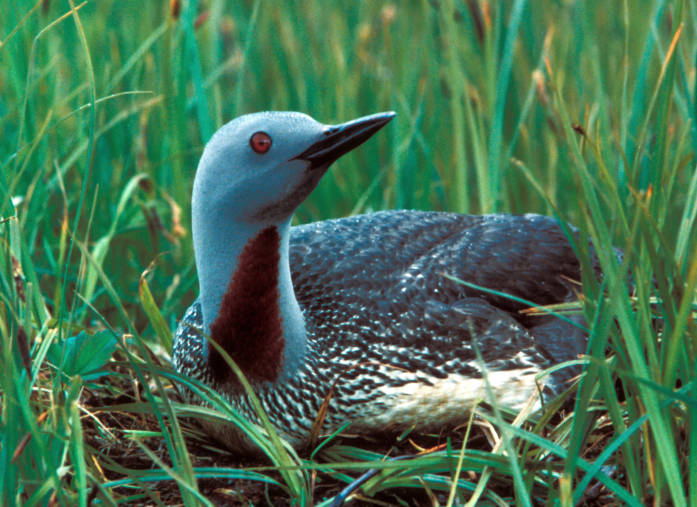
red-throated loon

Alaska Maritime National Wildlife Refuge